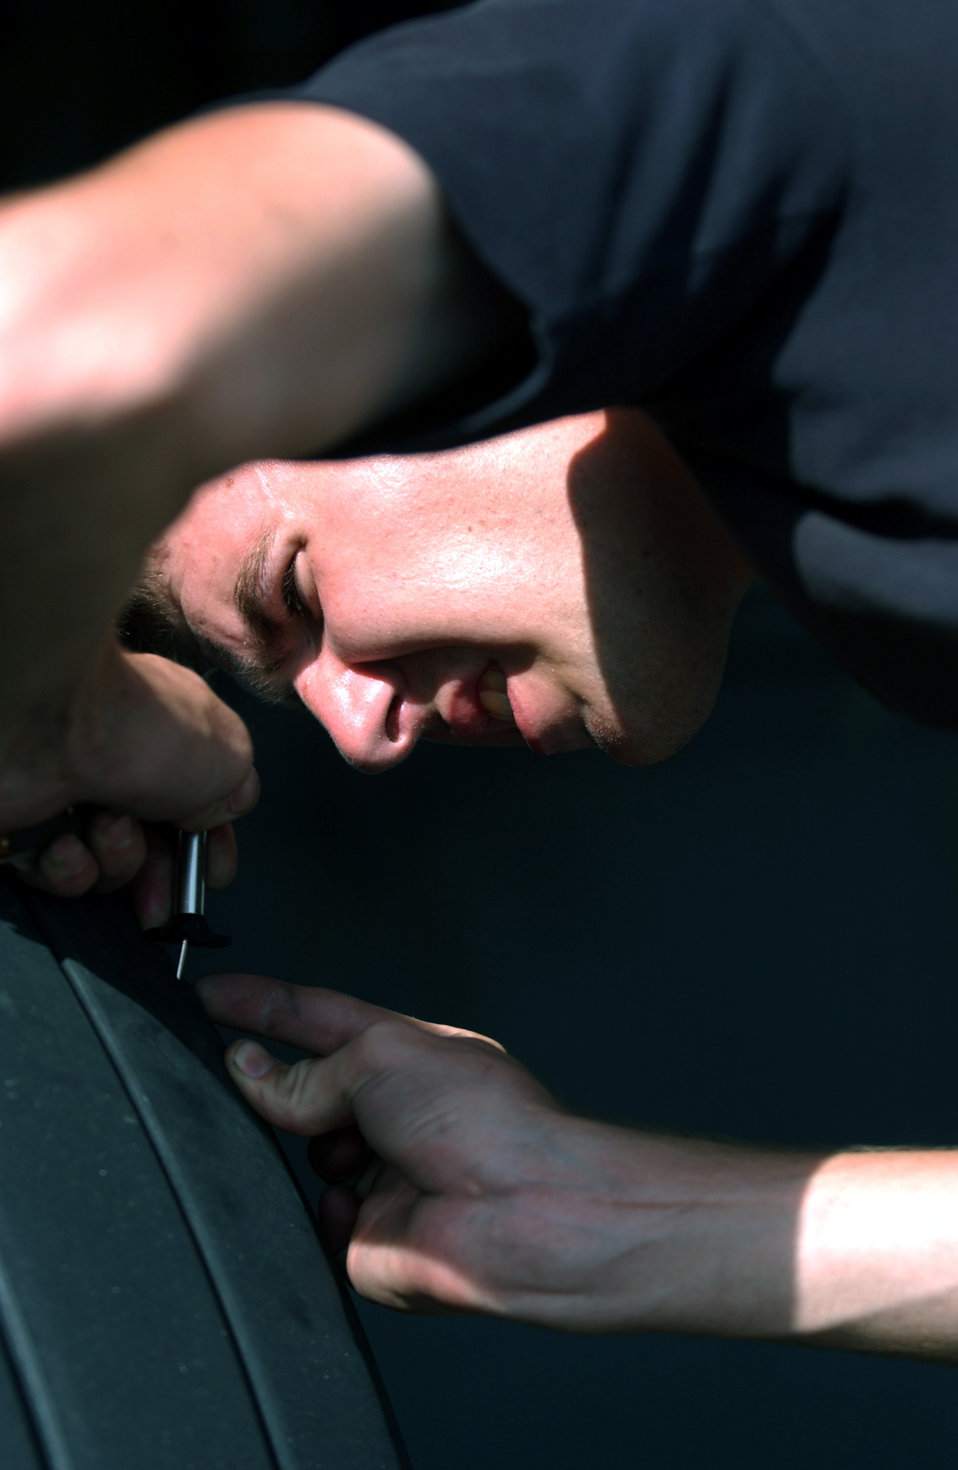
Tire checks

SOUTHWEST ASIA -- Airman 1st Class Tyler Main performs post-flight maintenance checks on the tire of a KC-135 Stratotanker following an aerial refueling mission here recently. Airman Main is KC-135 crew chief deployed from the 92nd Air Refueling Wing, Fairchild Air Force Base, Wash., in support of Operation Iraqi Freedom.